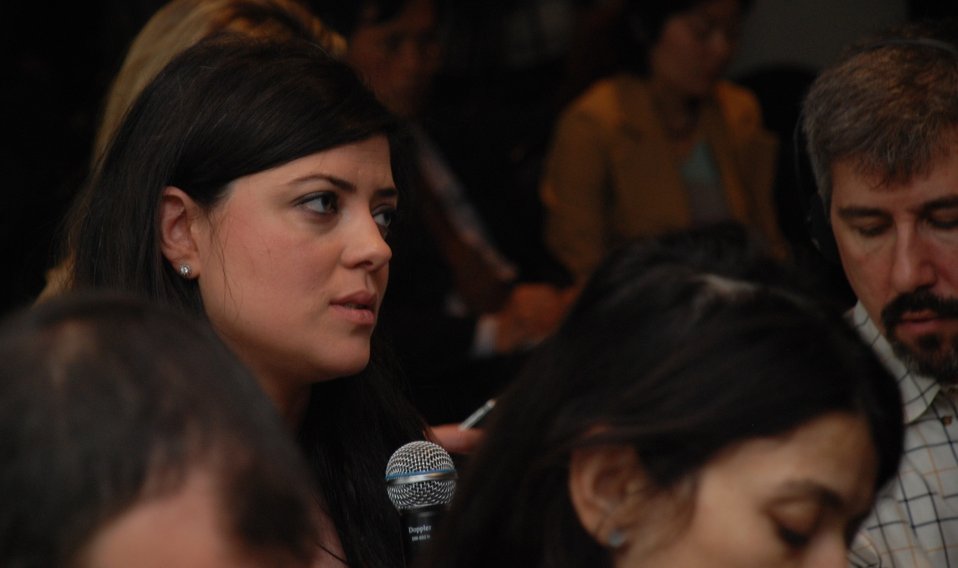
Joint Press Availability in Istanbul, Turkey

Hande Aşık from CNNTurk asks a question at a joint press availability with U.S. Secretary of State John Kerry and Turkish Foreign Minister Ahmet Davutoğlu in Istanbul, Turkey. April 7, 2013.